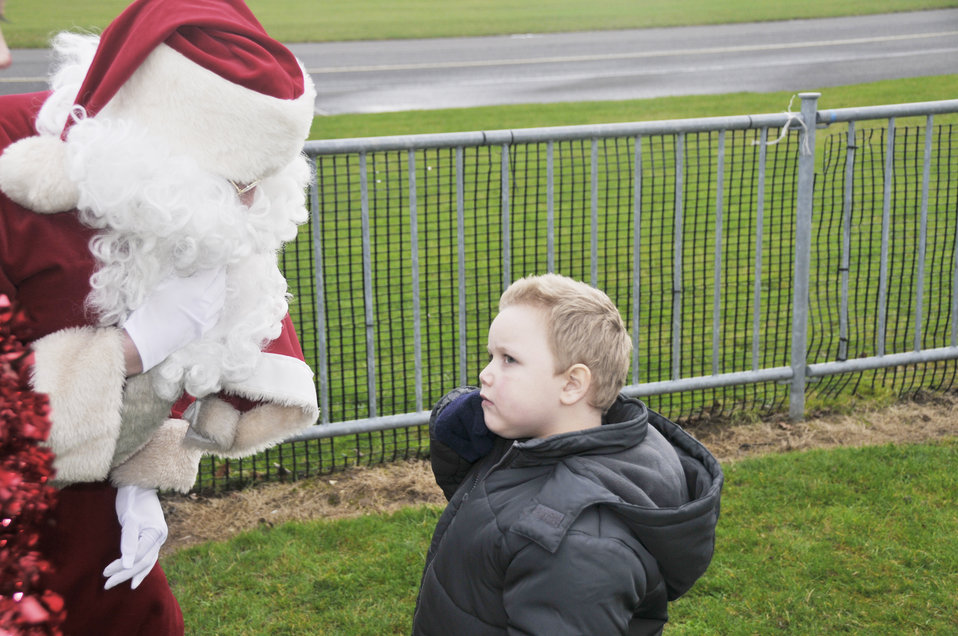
Lakenheath Airmen held Christmas party for special children

A young boy speaks with Santa Claus Dec. 5, 2009, at the Imperial War Museum at Duxford, England. Volunteers from the 48th Fighter Wing from Royal Air Force Lakenheath, hosted a party at the museum for terminally and seriously ill children.